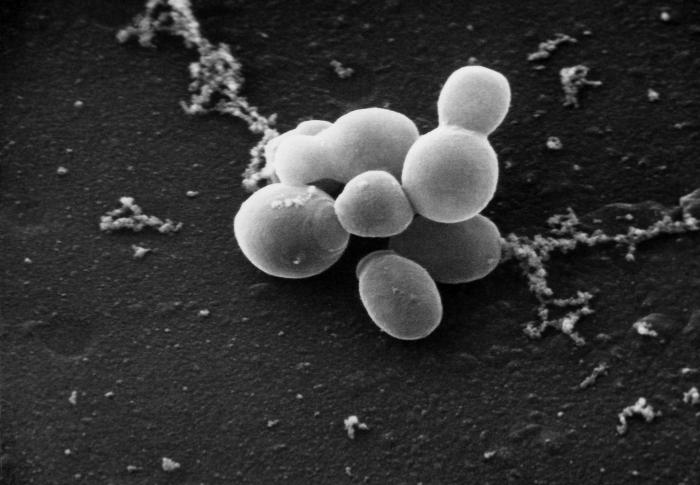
Scanning electron micrograph (SEM) of Malassezia furfur.